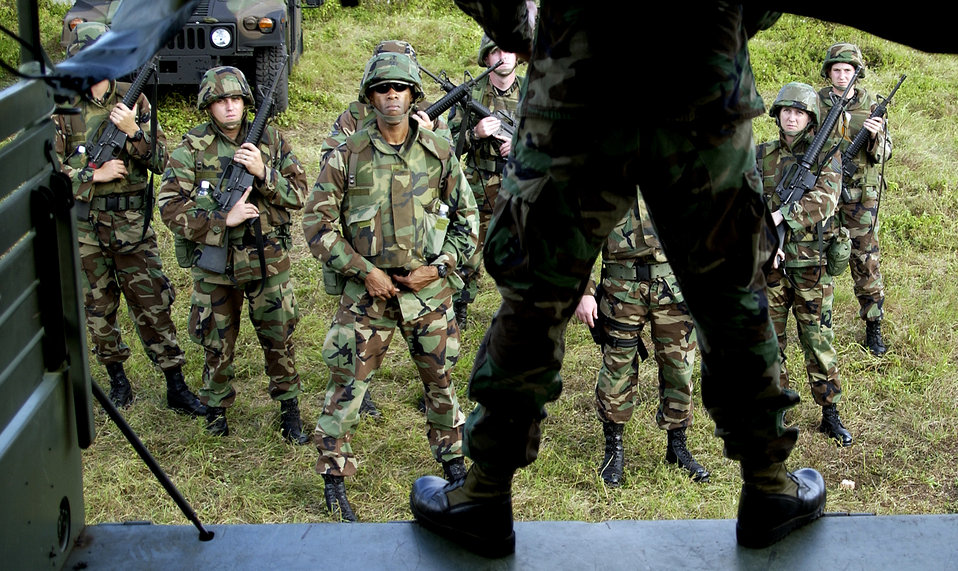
Joint Training

Airmen receive convoy and weapons familiarization training during the Guam Initial Readiness Response Exercise, or GIRRE, Tuesday, March 14, 2006. The GIRRE is an annual island-wide exercise between Andersen Air Force Base and Naval Marianas to train on deployments and joint disaster response skills.